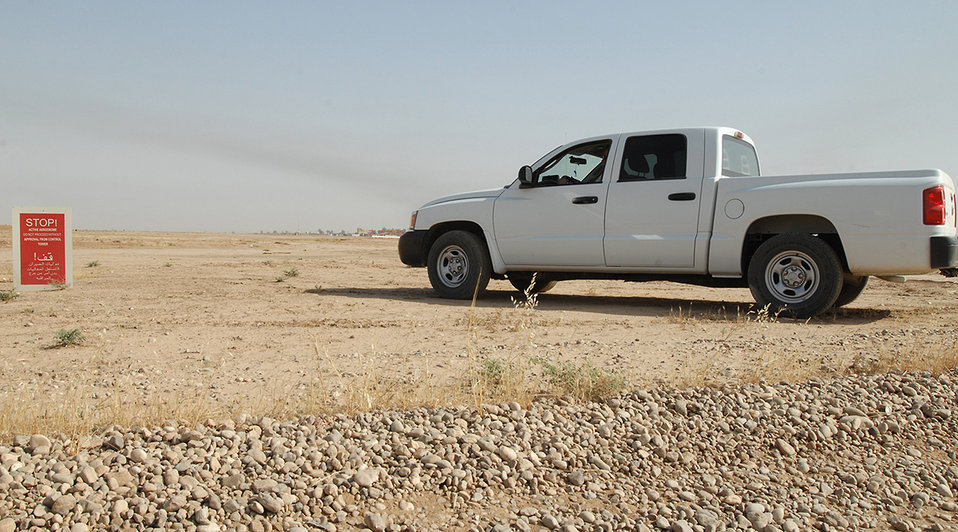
Kirkuk self-help project protects airfield assets, saves money

This is a picture of what it looked when vehicles had uncontrolled access to the base's airfield prior to a 506th Air Expeditionary Group self-help airfield-security project in June at Kirkuk Air Base, Iraq. Volunteers helped save an estimated $500,000 by using existing assets to build a barricade along the airfield perimeter.